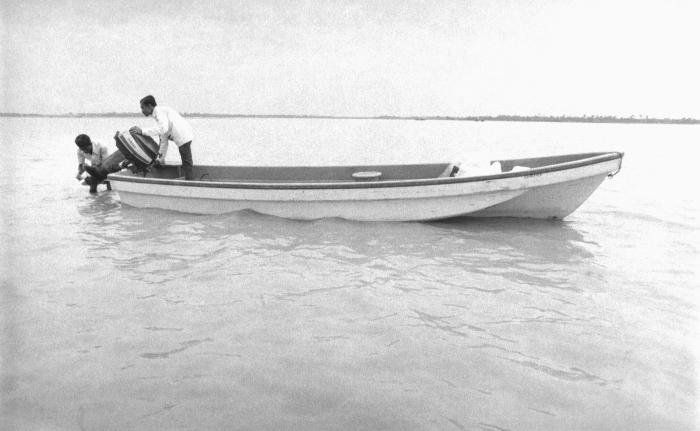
This photograph depicted two Bangladesh men in a motorboat whose engine was being repaired by one of the men while he stood alongside the boat. Like motor scooters, the motorboat was very important as a mode of transportation, do to its speed, and maneuverability, and often used by public health personnel when being shuttled from one village to another. This photograph provided by Dr. Stan Foster, and captured by Pierre Claquin, M.D., B.A.C., who at the time was a member of the World Health Organization's Smallpox Eradication Program. It was part of a series photographed by former E.I.S. officer, Stanley O. Foster M.D., M.P.H., and was one of a series entitled 'The Story of One Smallpox Jeep', which depicted the travails faced by the jeep, and its occupants of public health practitioners, as they road through the Bangladesh countryside in an attempt to eradicate smallpox from the country.